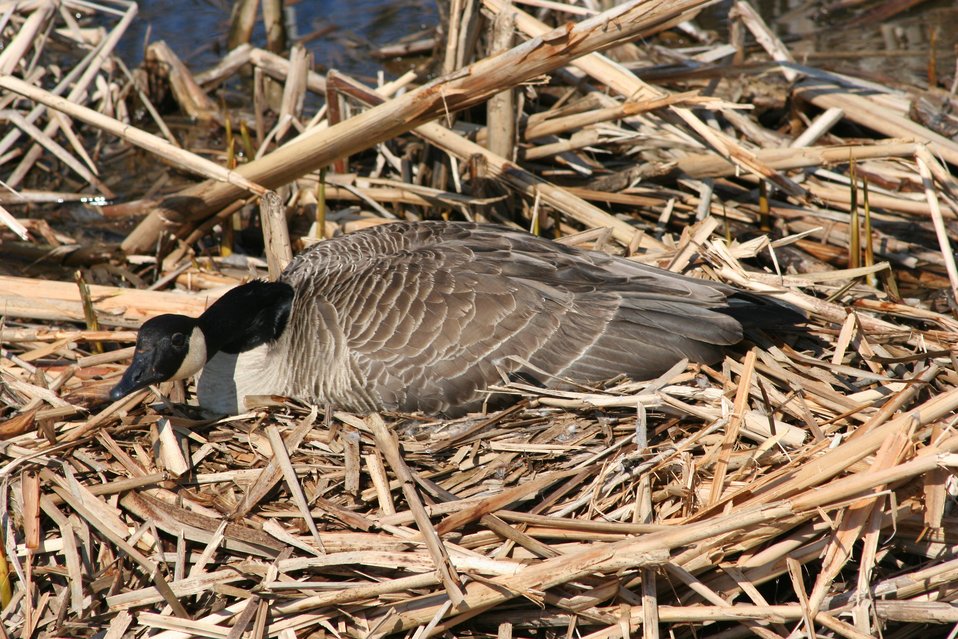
A nesting Canada Goose (Branta canadensis) at the Tifft Nature Preserve, Buffalo, NY.